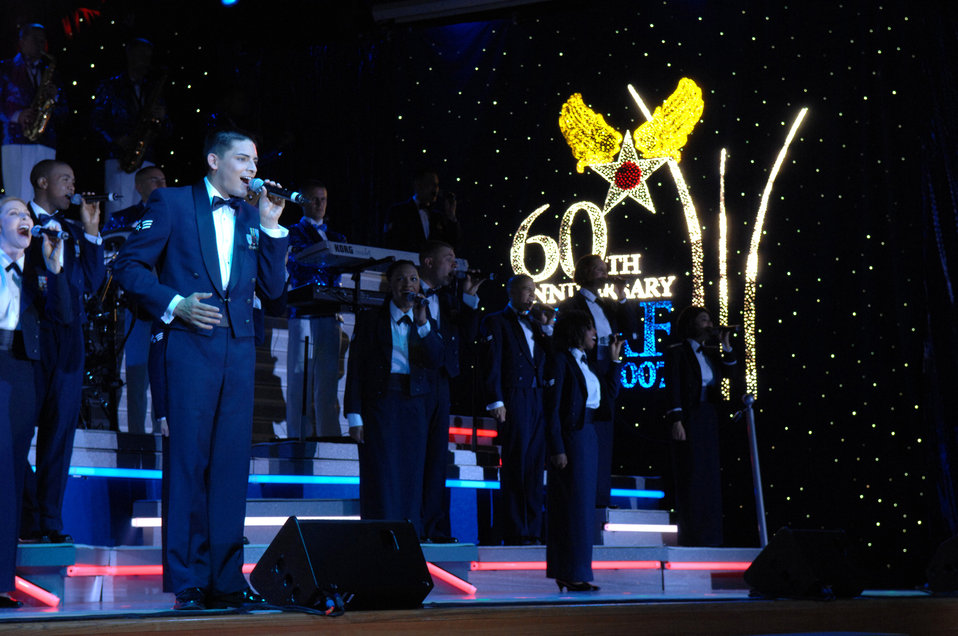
Tops in Blue Airmen strut their stuff

Tops in Blue Airmen sing to the crowd May 24 at the Tays Center near Holloman Air Force Base in Alamogordo, N.M. This year marks the 60th anniversary of the U.S. Air Force. Throughout the year, the Air Force is commemorating 60 years of air and space power.